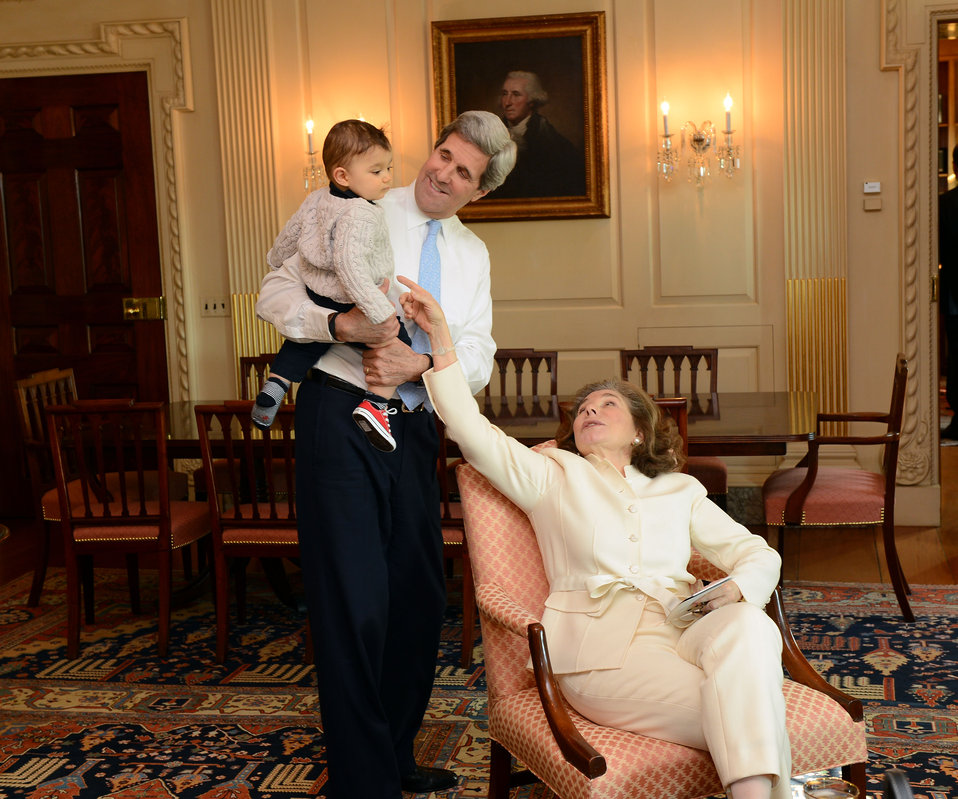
Secretary Kerry and his Wife, Teresa Heinz Kerry, Enjoy Their Grandson

U.S. Secretary of State John Kerry and his wife, Teresa Heinz Kerry, spend a quiet moment with their grandson Alexander in the Secretary's outer office, before his ceremonial swearing-in at the U.S. Department in State in Washington, D.C., February 6, 2013.